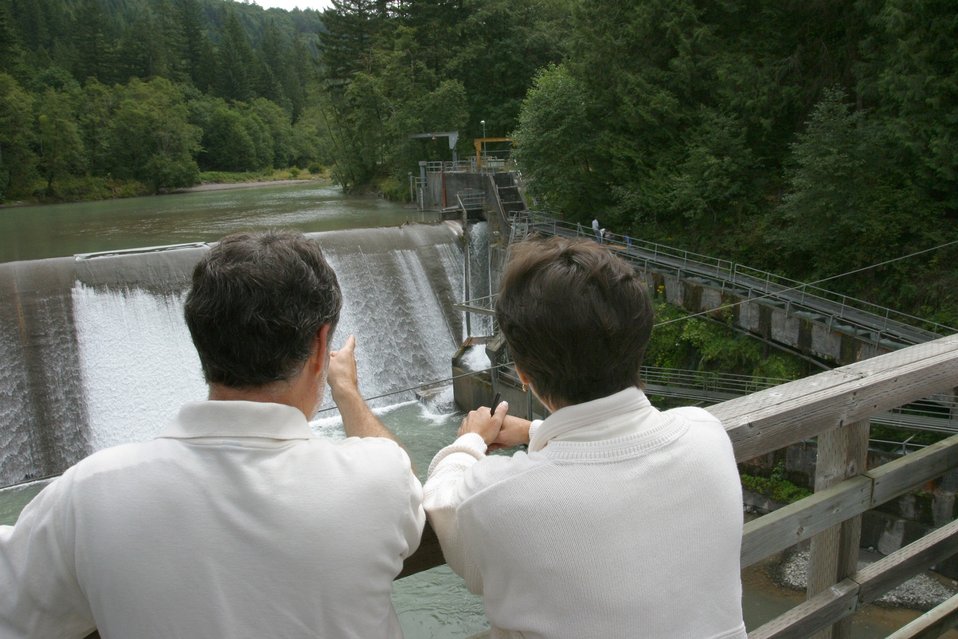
Salem District Manager Denis Williamson and BLM Oregon State Director, Elaine Brong look at Marmot Dam on the Sandy River. BLM will acquire the site after the dam is removed in 2006.